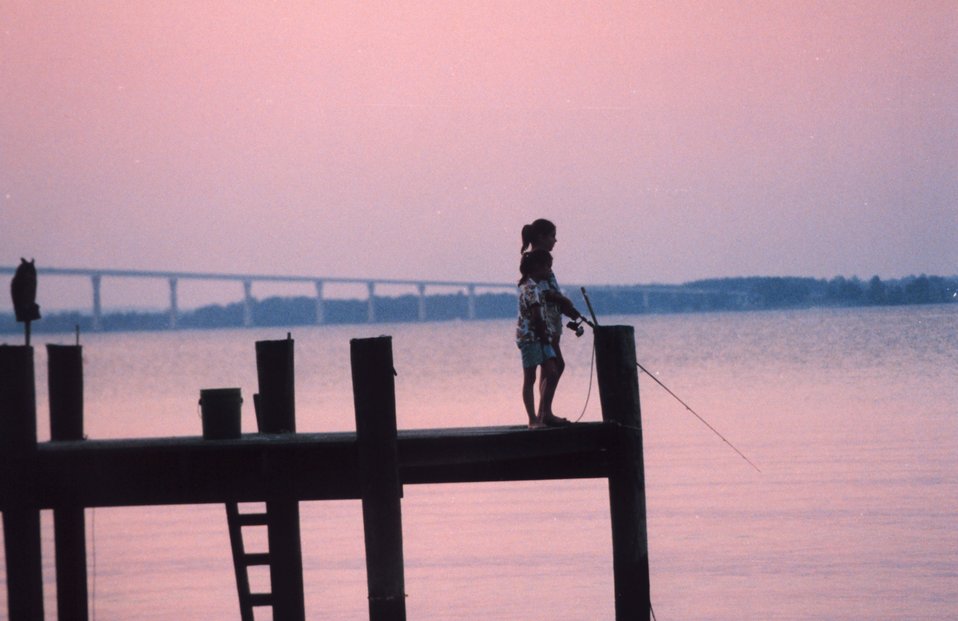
A summer evening's fishing effort along the Patuxent River.